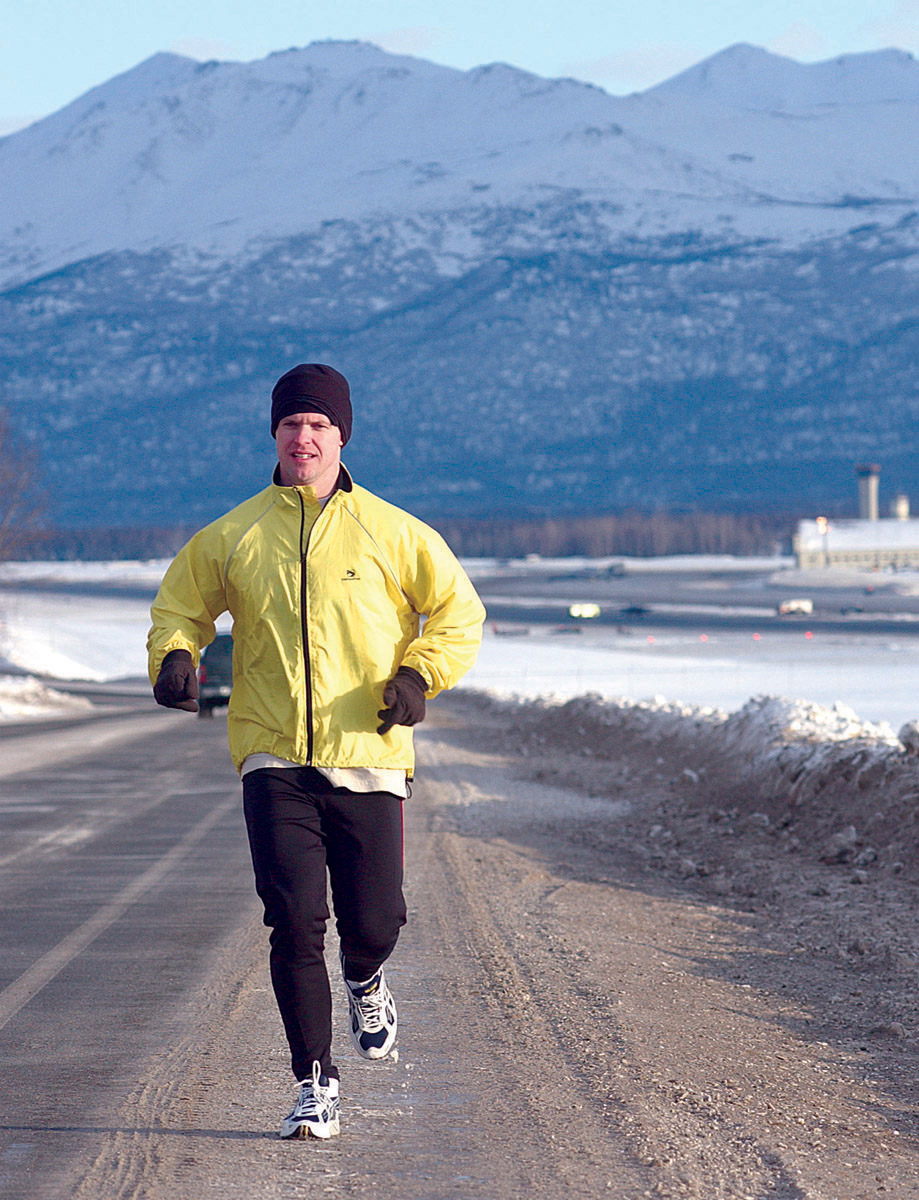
Arctic run

ELMENDORF AIR FORCE BASE, Alaska -- First Lt. Max Lemons logs in a few miles while jogging here in temperatures hovering near zero. Higher-than-average snowfall totals and colder temperatures have not prevented many